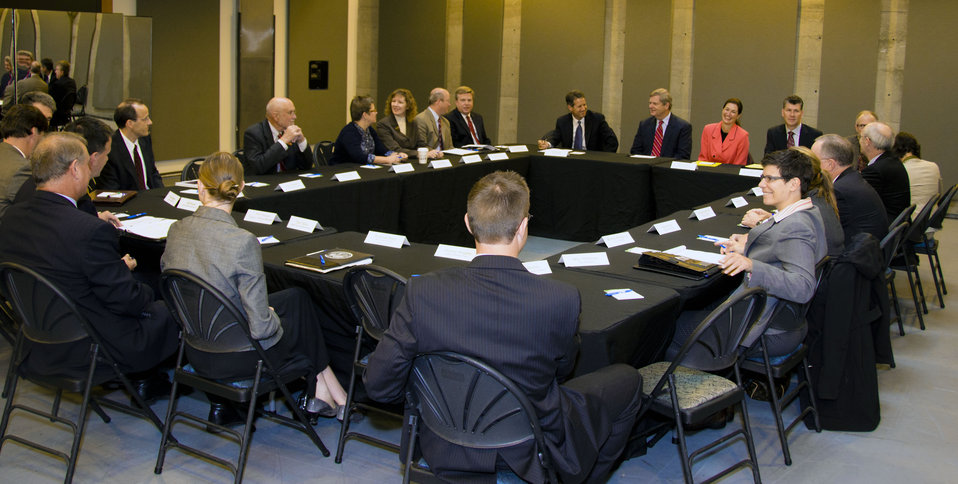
The White House Business Council Roundtable in Portland Oregon at the Gerding Theater with Agriculture Secretary Tom Vilsack and representatives from the Portland, OR Metropolitan Area on Tuesday, September 27, 2011.